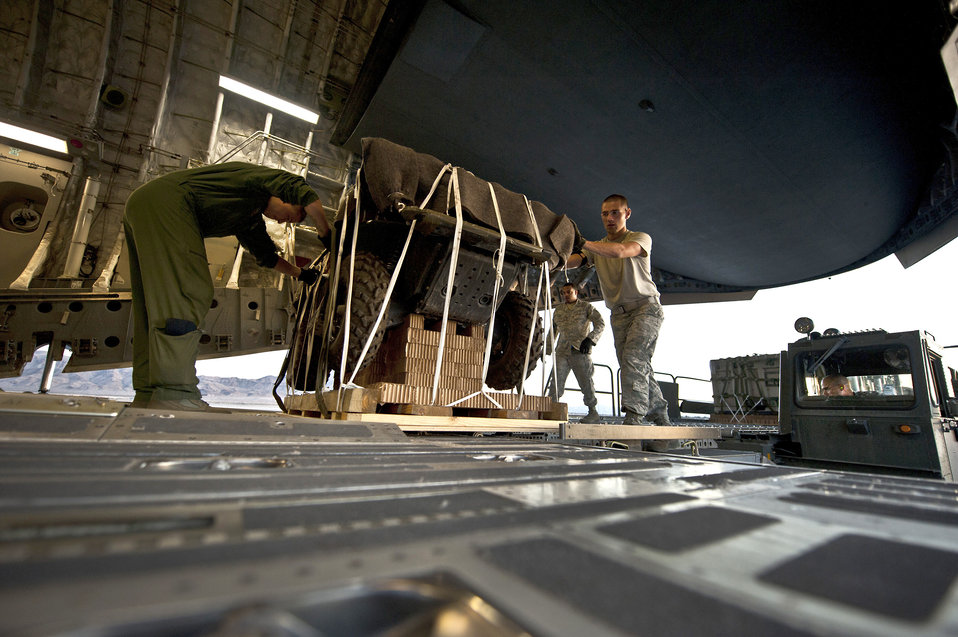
Preparing for flight

Airmen push cargo on to a C-17 Globemaster III during the Mobility Air Forces Exercise Nov. 15, 2011, at Nellis Air Force Base, Nev. The C-17s and C-130 Hercules will assemble in aerial formations over the Nevada Test and Training Range to conduct air and ground operations as part of the bi-annual U.S. Air Force Weapons School MAFEX.